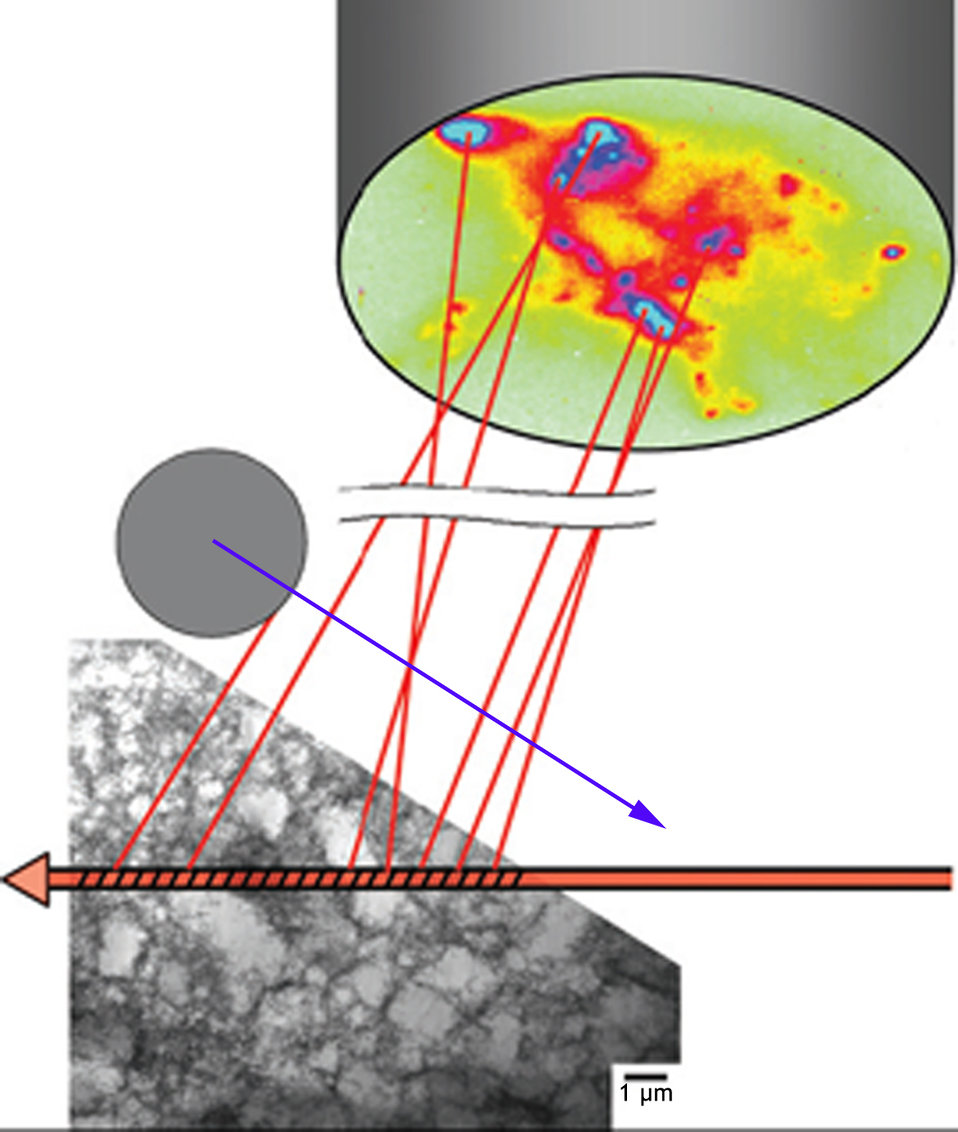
New X-Ray Microbeam Answers 20-Year-Old Metals Question

Novel 3-D microbeam experiment enables direct proof of the Mughrabi model of metal stress. Submicron X-ray beam (broad arrow) penetrates a deformed copper single crystal and is diffracted onto a CCD detector. Platinum wire profiler (circle) traverses the sample and successively intercepts diffracted X-rays, providing depth measurement and allowing strains to be measured from individual dislocation cells.